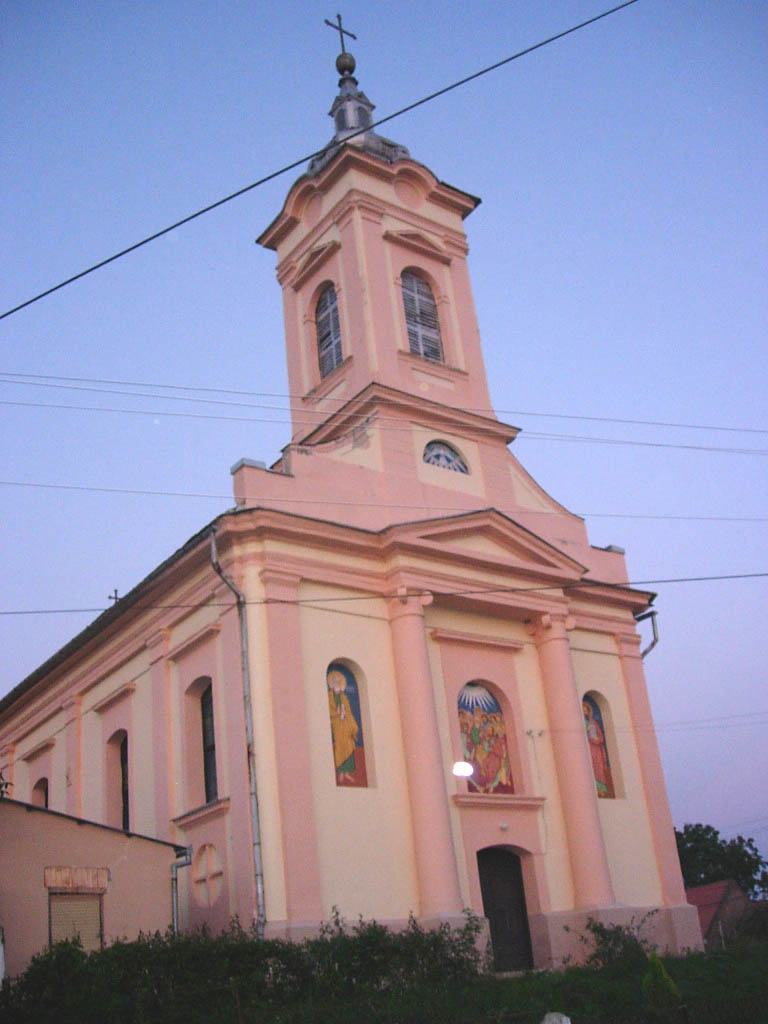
Jablanka, Romanian Orthodox church